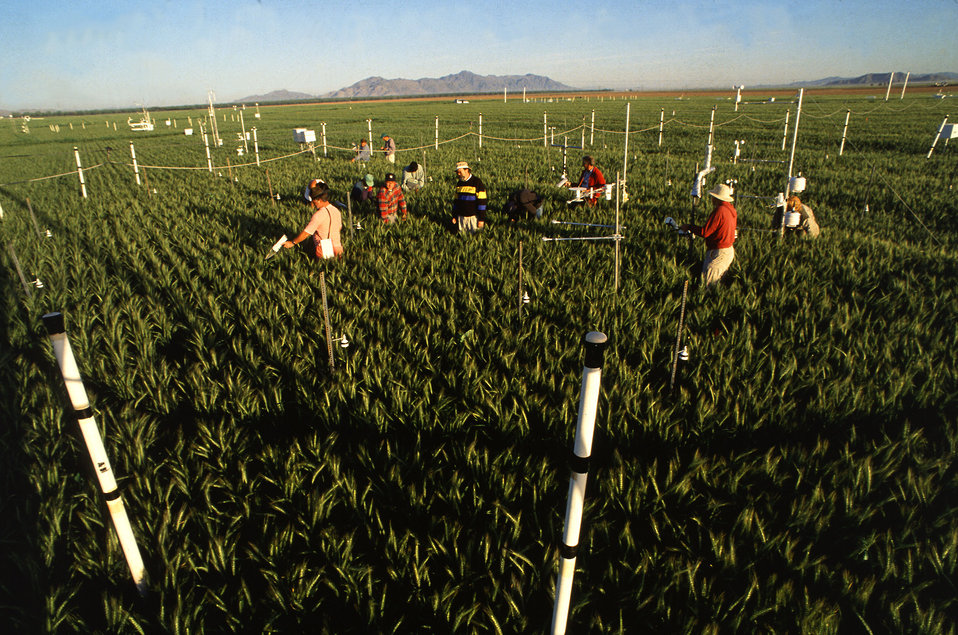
U.S. Department of Agriculture (USDA) Agricultural Research Service (ARS) scientists measure the growth of wheat surrounded by elevated levels of atmospheric carbon dioxide near Phoenix, AZ. The Free Air Carbon Dioxide Enrichment (FACE) study’s goal is to measure carbon dioxide's effect on plants. It is the largest experiment of this type ever undertaken.